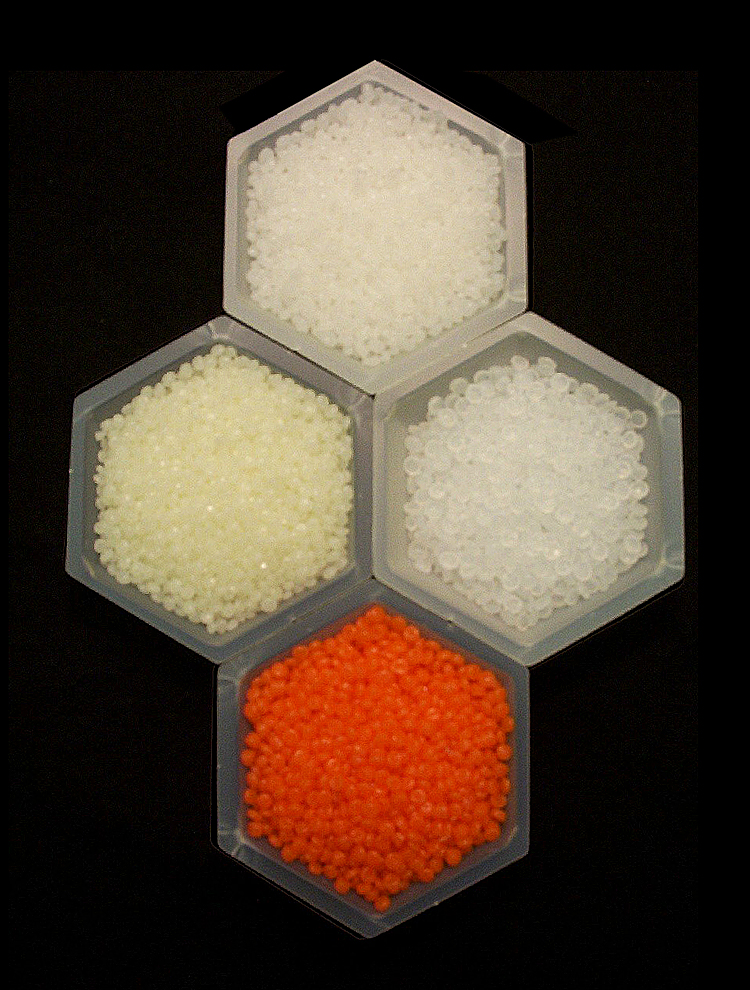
Polymers; reference materials

NIST polymer reference materials (a variety of polyethelene materials are shown) are used in the calibration and performance evaluation of instruments used in polymer research and manufacturing.